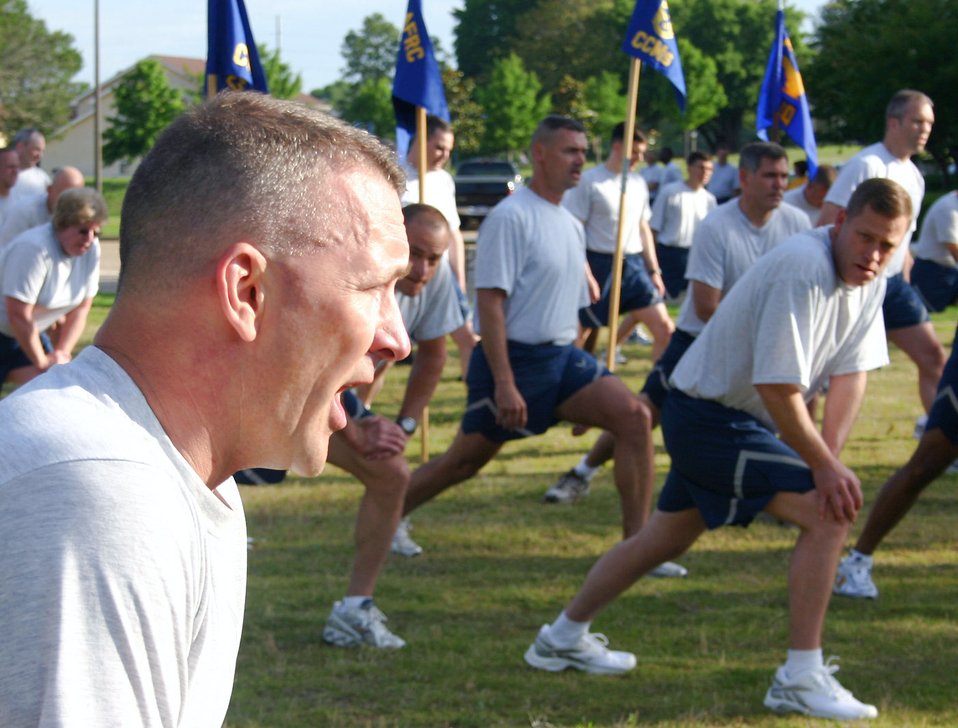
Top leaders unite for senior enlisted summit

Chief Master Sgt. Mark Brejcha calls out the count for leg stretches during warm-ups for a formation run May 18 at Maxwell Air Force Base, Ala. More than 350 command chief master sergeants, career field managers, professional military education commandants and other key senior enlisted leaders kicked off the 2008 Senior Enlisted Leader Summit with a 2.2-mile formation run at Maxwell's Gunter Annex. Chief Brejcha is the 91st Space Wing command chief master sergeant at Minot AFB, N.D.